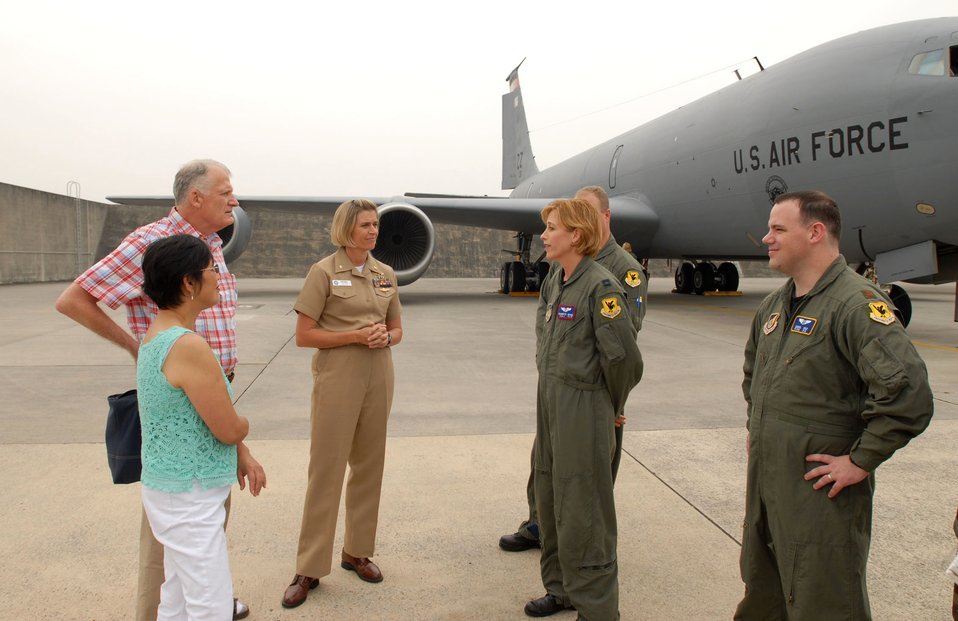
Kadena school teacher thanks his military medical heroes

Capt. Jeannette Ward (second from right) talks with Jim and Marite Brierly while Navy Cmdr. (Dr.) Sharon Troxel and Maj. (Dr.) Dan Cole look on May 2 at Kadena Air Base, Japan. Commander Troxel, Major Cole and Captain Ward were part of the team that treated and medically evacuated Mr. Brierly to Hawaii after he suffered a major heart attack March 30, 2006. Mr. and Mrs. Brierly visited the units to thank them for their efforts. Mr. Brierly is a English as a second language teacher at Kadena Elementary School here. Commander Troxel is the head of the emergency department at U.S. Navy Hospital-Okinawa. Major Cole is the 18th Medical Operations Squadron medical services flight commander and a critical care medical attendant team staff physician for pulmonary and critical care. Captain Ward is a flight nurse with the 18th Aeromedical Evacuation Squadron.